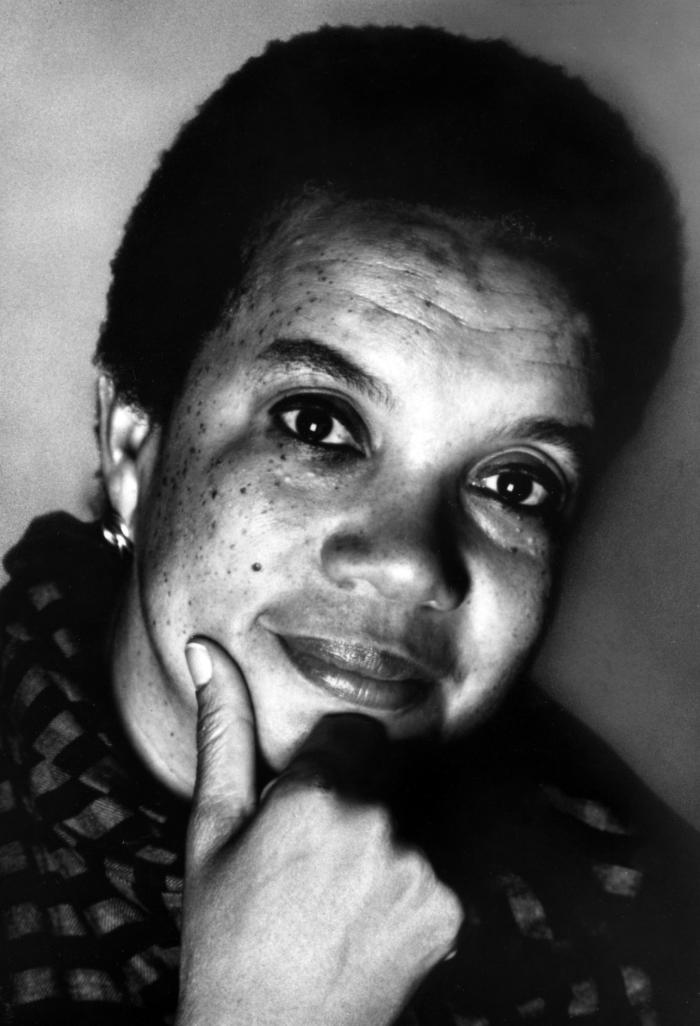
This was a 1994 photographic portrait of Marian Wright Edelman; Mrs. Edelman delivered the annual Joseph W. Mountin Lecture on September 7, 1994.